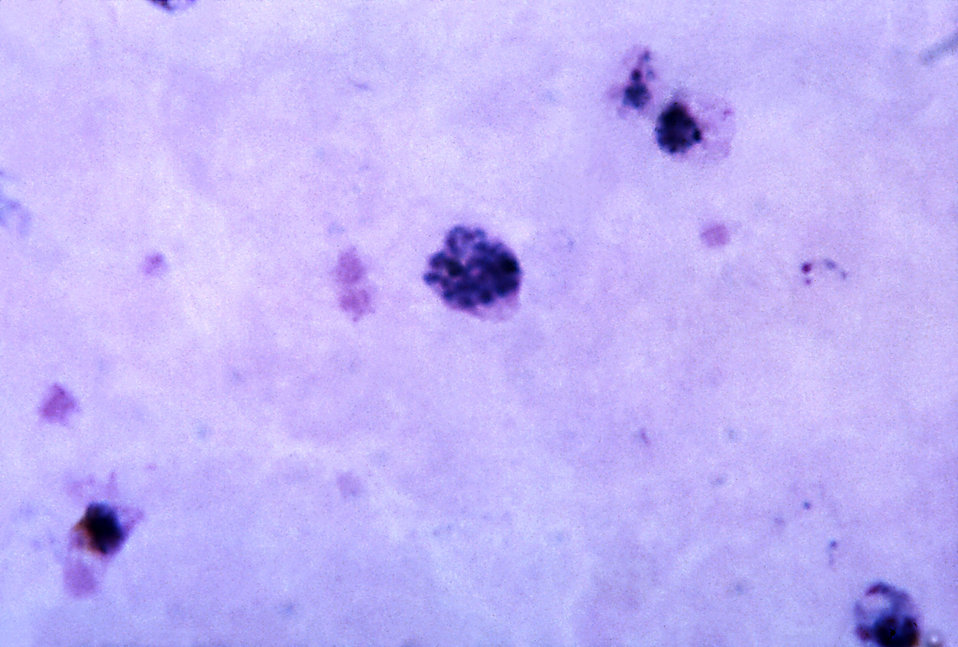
This thick film micrograph revealed a mature Plasmodium vivax schizont containing 20 merozoites; Magnified 1125x.